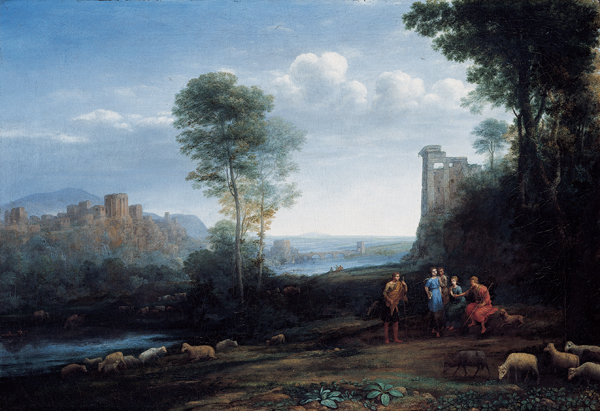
'Pastoral Landscape', oil on canvas painting by Claude Lorrain